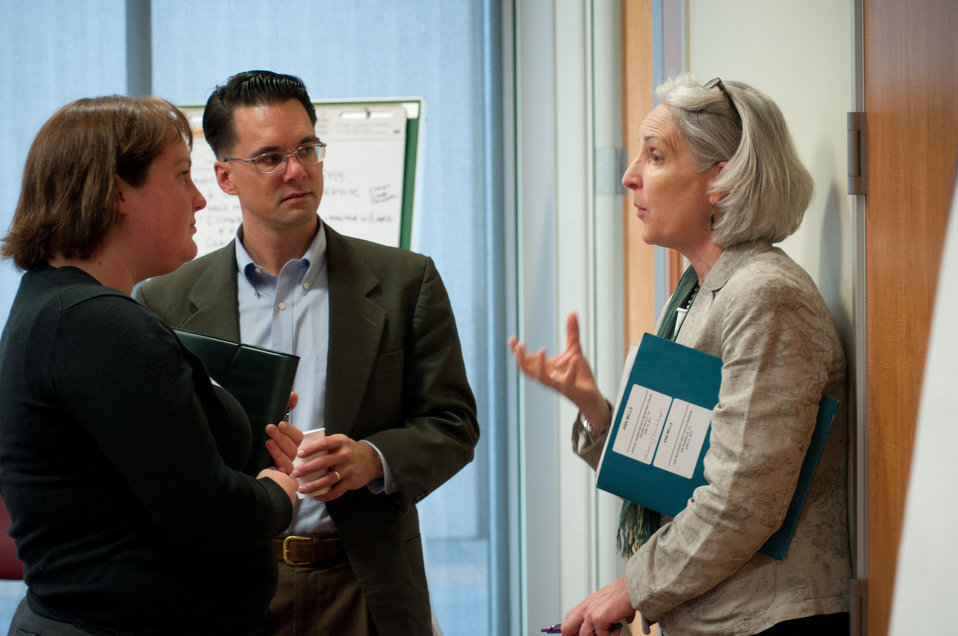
Deputy Undersecretary for Natural Resources and Environment Ann Mills (right) speaking with Aide to Congressman Sam Farr, Alec Arago (center) and a participant at America’s Great Outdoors Initiative (AGO) Monterey Bay Pilot Area Focus Session in the City of Watsonville’s Civic Plaza in California, on Friday, June 17, 2011. Federal and state resource management agencies came together to identify partnership opportunities and determine actions for protection and enhancement of water quality and publicize voluntary stewardship in the watersheds that drain into the Monterey Bay National Marine Sanctuary. This area includes the counties of San Mateo, Santa Cruz, Santa Clara, San Benito, Monterey, and San Luis Obispo. Key questions identified existing multi-county or multi land use partnerships; what is not being done; possible partnerships - collective resources to maximize the benefits to natural resources and communities; and additional resources that organizations can bring to maximize AGO. President Barack Obama signed the initiative on April 16, 2010 to develop a 21st Century conservation and recreation agenda.